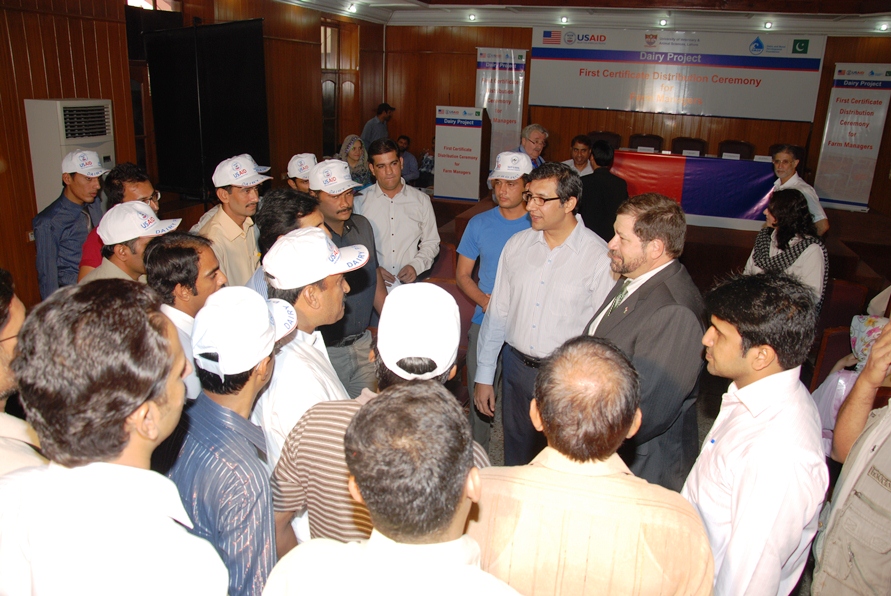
1 - USAID Mission Director Punjab Mr. Jeffrey Bakken interacting with the Dairy Project-trained dairy farm managers on October 4, 2012.